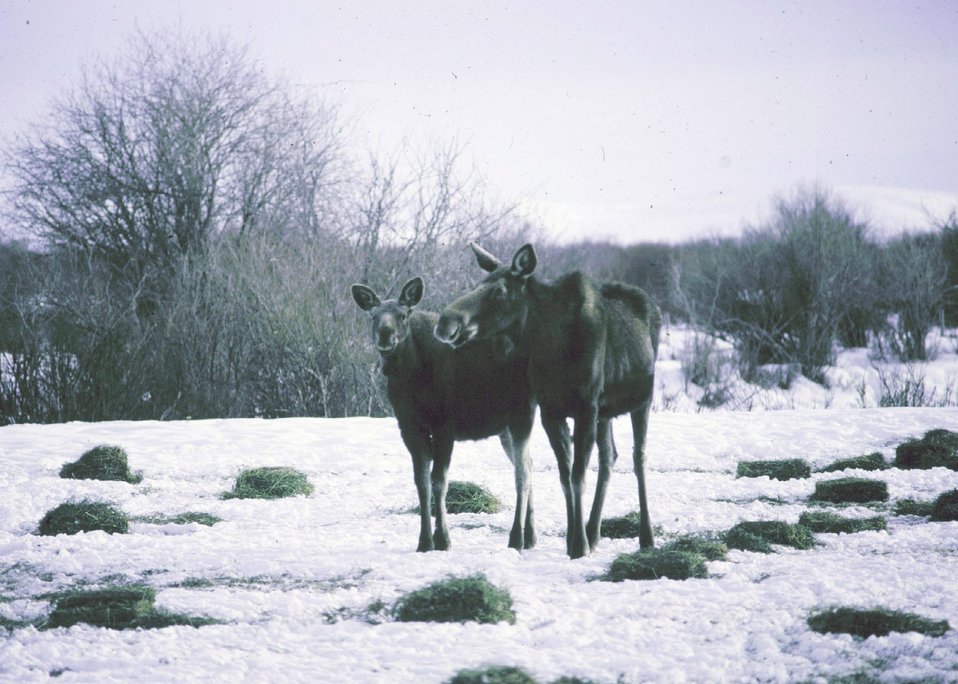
Winter feeding of moose in the Pindale Field Office Area.